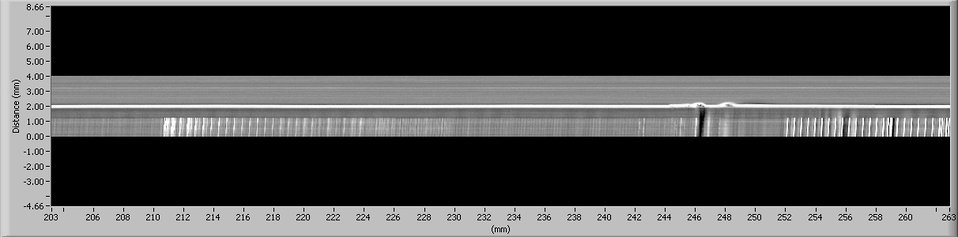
Magnetic Tape Analysis

This image, produced by the new NIST forensic tape analysis system, clearly reveals an overdubbing. The new recording is visible from the left bottom of
the image to about 188 millimeters on the distance counter, the large smudge at 216 mm was made by the erase head, and the original recording is visible
starting at about 220 mm.